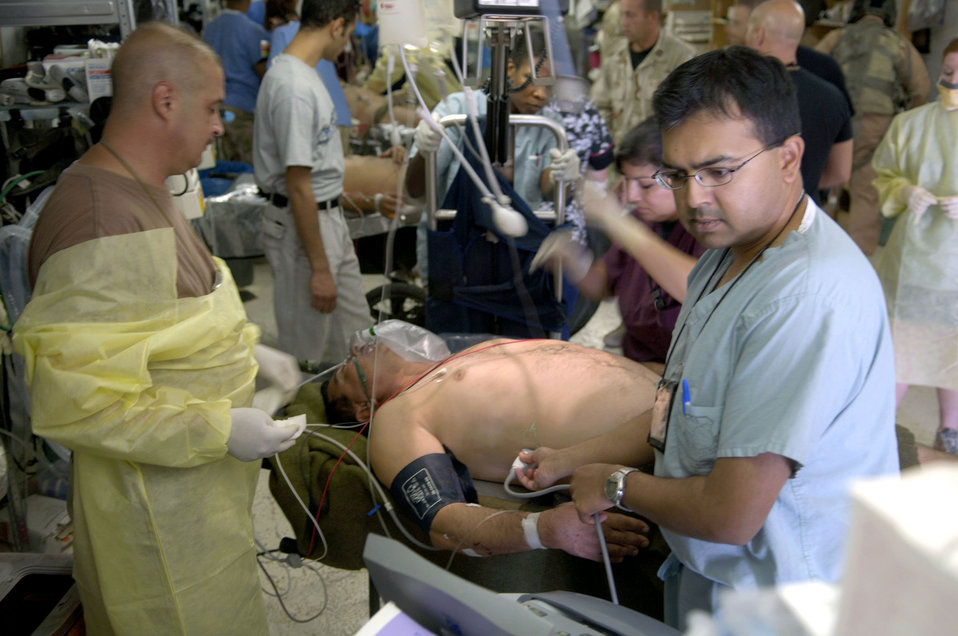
Specialized care

Medics from the Air Force Theater Hospital treat emergency room patients at Balad Air Base, Iraq, on Aug. 2. The hospital provides Level 1 trauma and specialized medical care.